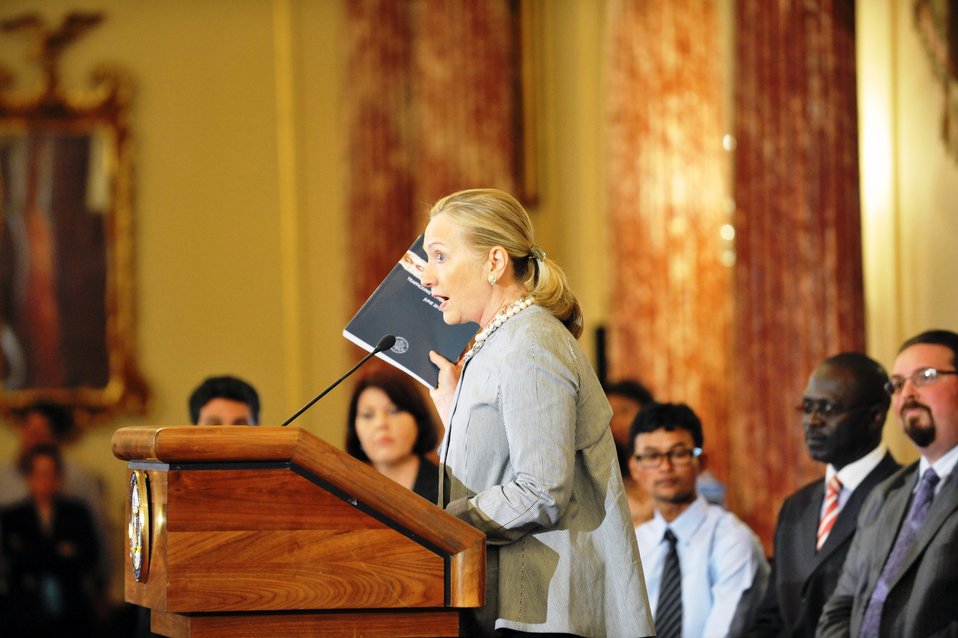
Secretary Clinton Unveils the 2012 Trafficking in Persons Report

U.S. Secretary of State Hillary Rodham Clinton unveils the 2012 Trafficking in Persons (TIP) Report during a ceremony at the U.S. Department of State in Washington, D.C., on June 19, 2012.